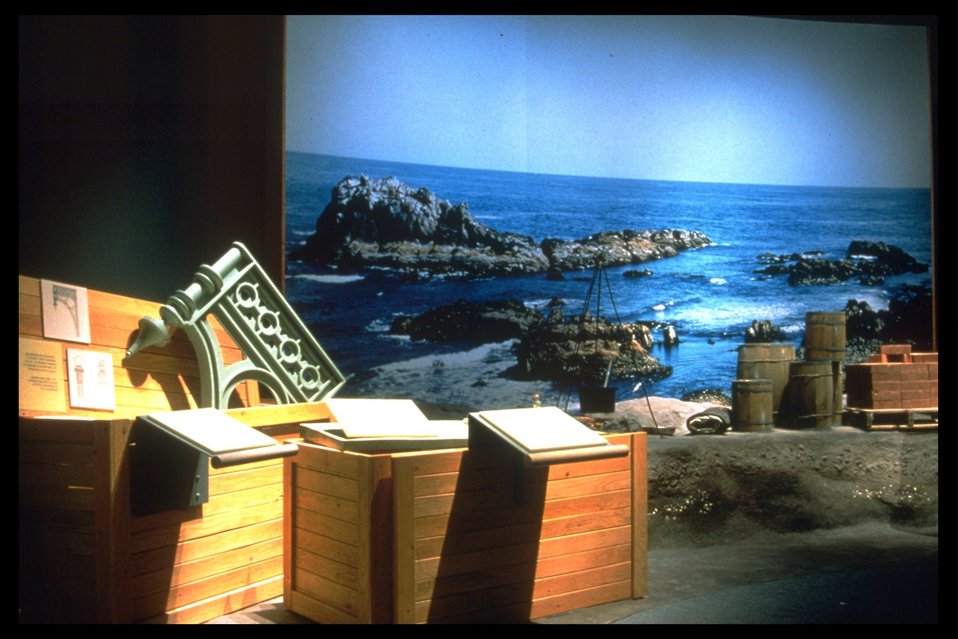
Building the Yaquina Head Light House" interpretive exhibit.